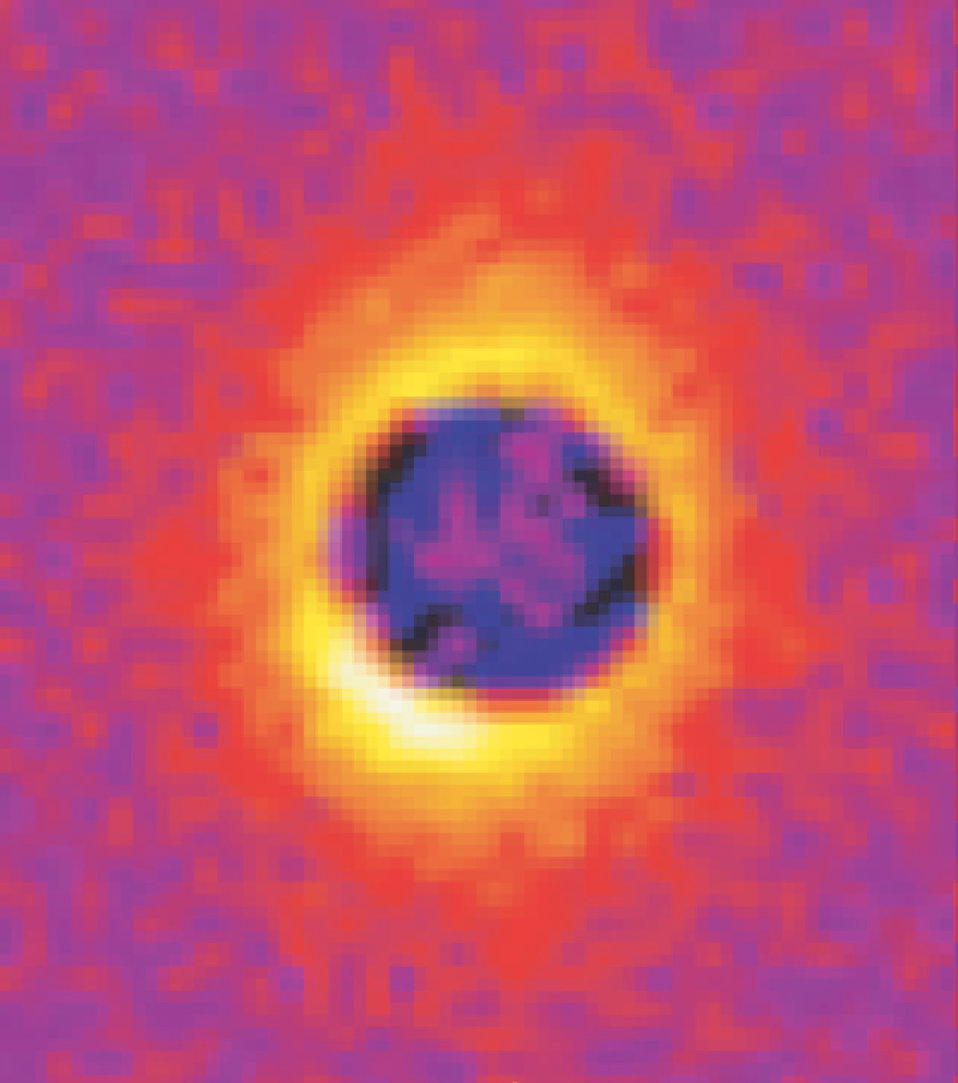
Nanotechnology; Nanomanufacturing; Nanotube Sizing

New NIST materials research shows that, under certain conditions, carbon nanotubes can be encouraged to sort themselves by length